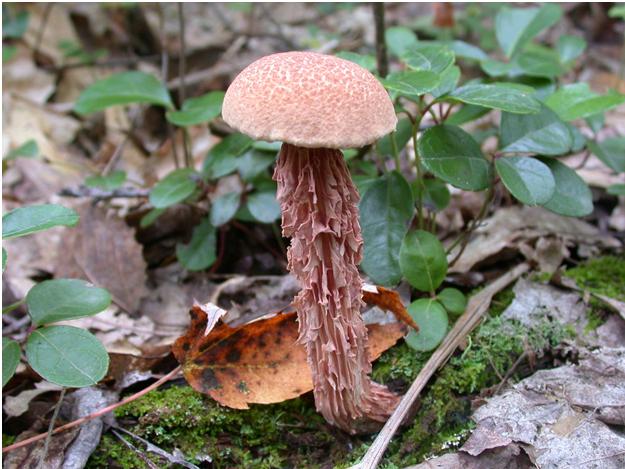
mushroom

Boletellus russellii grows under conifers and hardwoods, particularly oaks. It is found throughout most of eastern North America, but is relatively rare. The fungus grows around and actually covers tree roots, producing a fungal 'mantle' that helps the tree absorb water and nutrients.